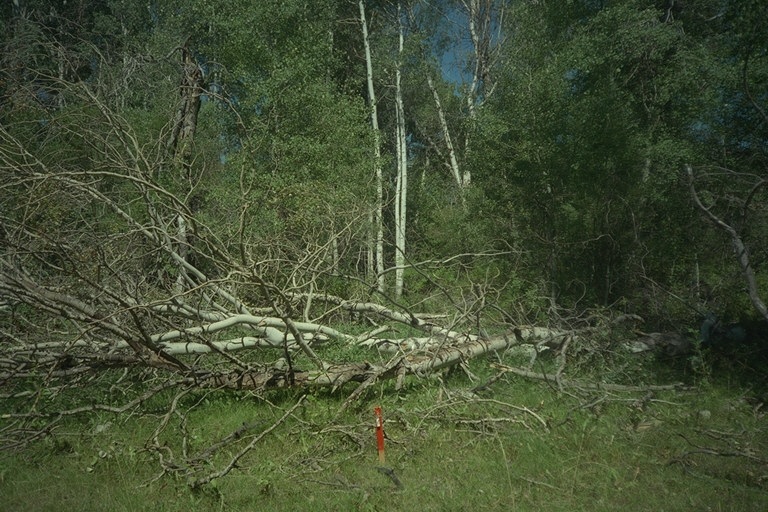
Riparian area Public Lands Salmon Field Office UCSC Upper Columbia Salmon Clearwater District